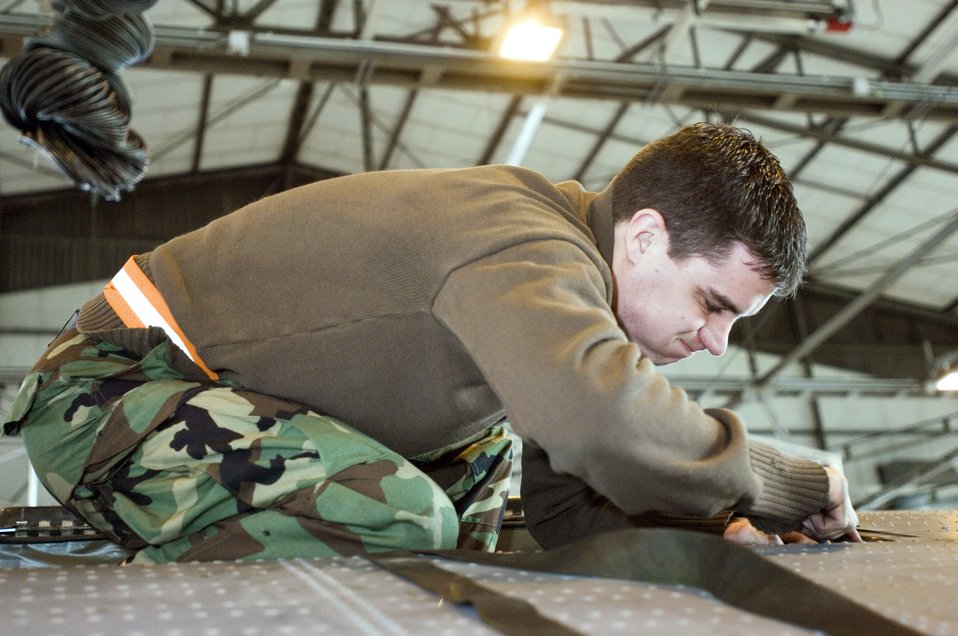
Herc operations

Senior Airman Andrew Tishim installs a life raft on a C-130 Hercules at Ramstein Air Base, Germany, on Monday, March 27, 2006. Airman Tishim is a Hercules crew chief with the 86th Aircraft Maintenance Squadron.